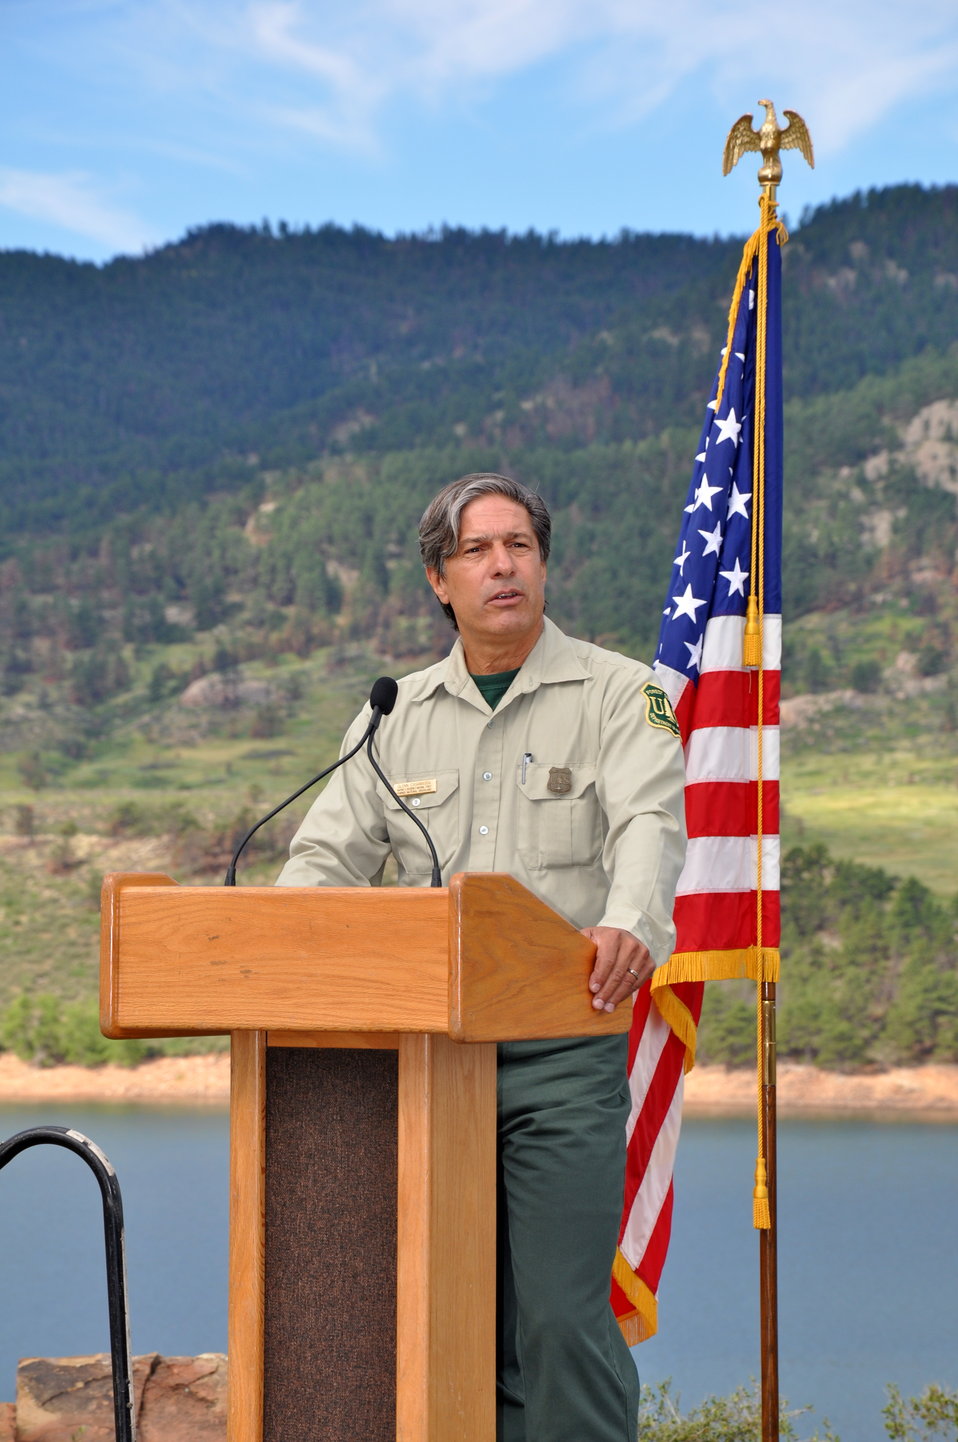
U.S. Forest Service Arapaho and Roosevelt National Forests and Pawnee National Grassland Supervisor Glenn Casamassa speaks at the Memorandum of Understanding (MOU) signing held at the Horsetooth Reservoir in Fort Collins, CO on Jul. 19, 2013. Agriculture Secretary Tom Vilsack and Interior Secretary Sally Jewell signed this MOU that will facilitate activities such as wildfire risk reduction through forest thinning, prescribed fire and other forest health treatments; minimizing post-wildfire erosion and sedimentation; and restoring areas that are currently recovering from past wildfires through tree planting and other habitat improvements.